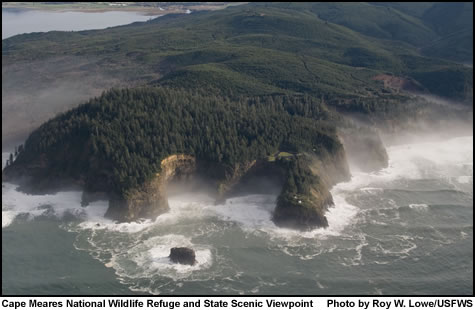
Cape Meares

An aerial view of Cape Meares National Wildlife Refuge along the northern Oregon Coast.